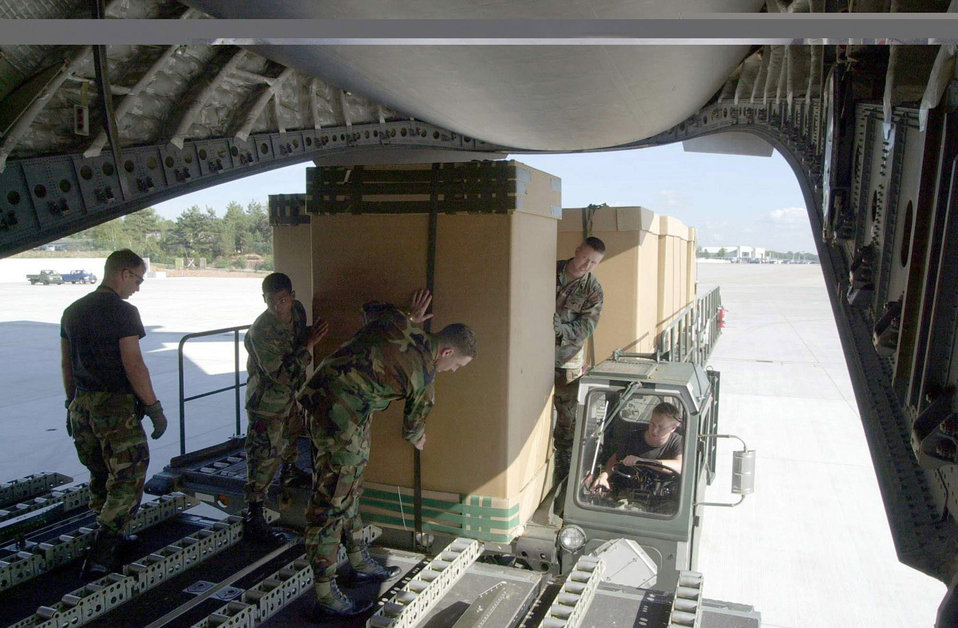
HDR Load

OPERATION ENDURING FREEDOM -- Soldiers from the 5th Quartermasters Company, Rhine Ordinance Barracks, Germany, help load a C-17 transport plane with Tri-Wall Aerial Delivery (TRIAD) containers full of humanitarian daily rations Oct. 10, 2001 at Ramstein Air Base, Germany. The C-17 Globemaster III, from Charleston Air Force Base, S.C., is supporitng Operation Enduring Freedom with humanitarian relief airdrops over Afghanistan.